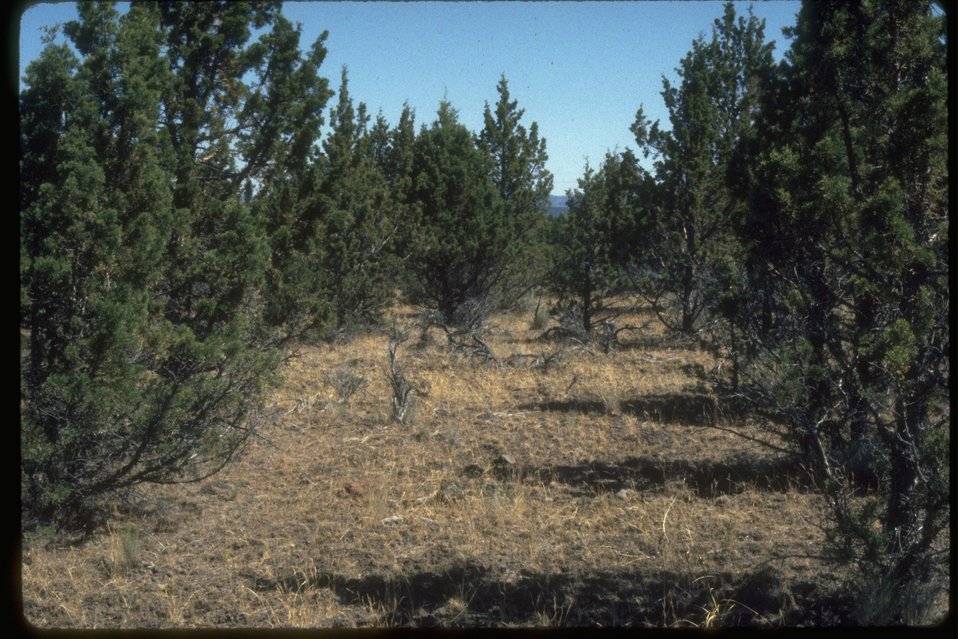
Juniper invade the rangeland (sparse understory).